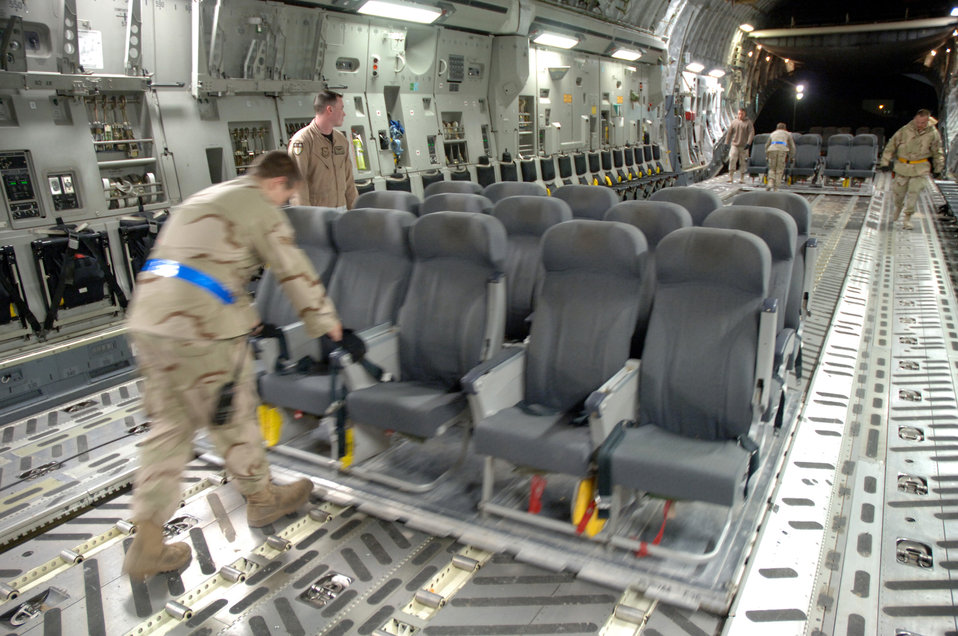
C-17 cargo load

Crewmembers from the 817th Expeditionary Airlift Squadron unload pallets of troop seats from a C-17 Globemaster III at a deployed location in Southwest Asia on Sunday, Mar. 12, 2006. The aircraft is deployed from McChord Air Force Base, Wash.